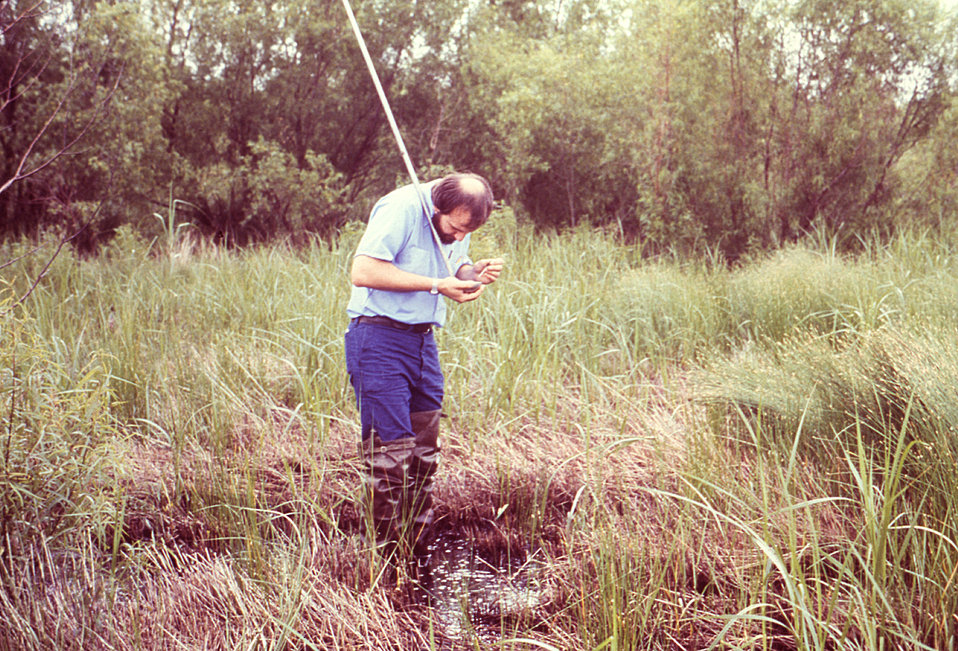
This 1978 photograph depicted an entomologic field technician who was in the process of investigating the presence of Culex salinarius mosquitoes known to thrive in this New Orleans, Louisiana salt marsh.